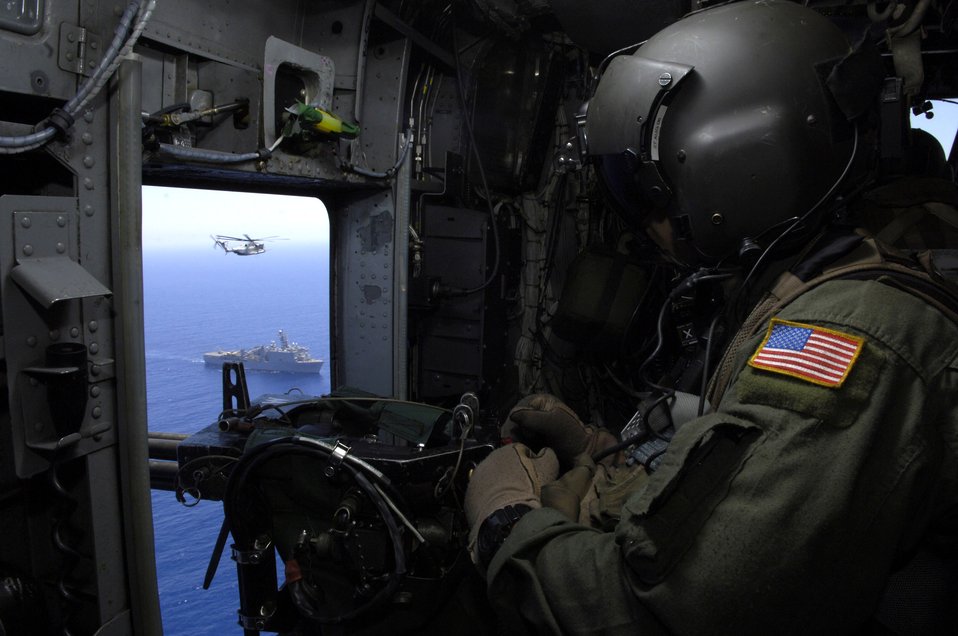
Secretary of State visits Lebanon

Tech. Sgt. John Stott looks out the left side of his MH-53M Pave Low helicopter as it escorts a Marine CH-53 Sea Stallion transporting Secretary of State Condoleezza Rice from Cyprus to the U.S. Embassy in Beirut, Lebanon, July 24.